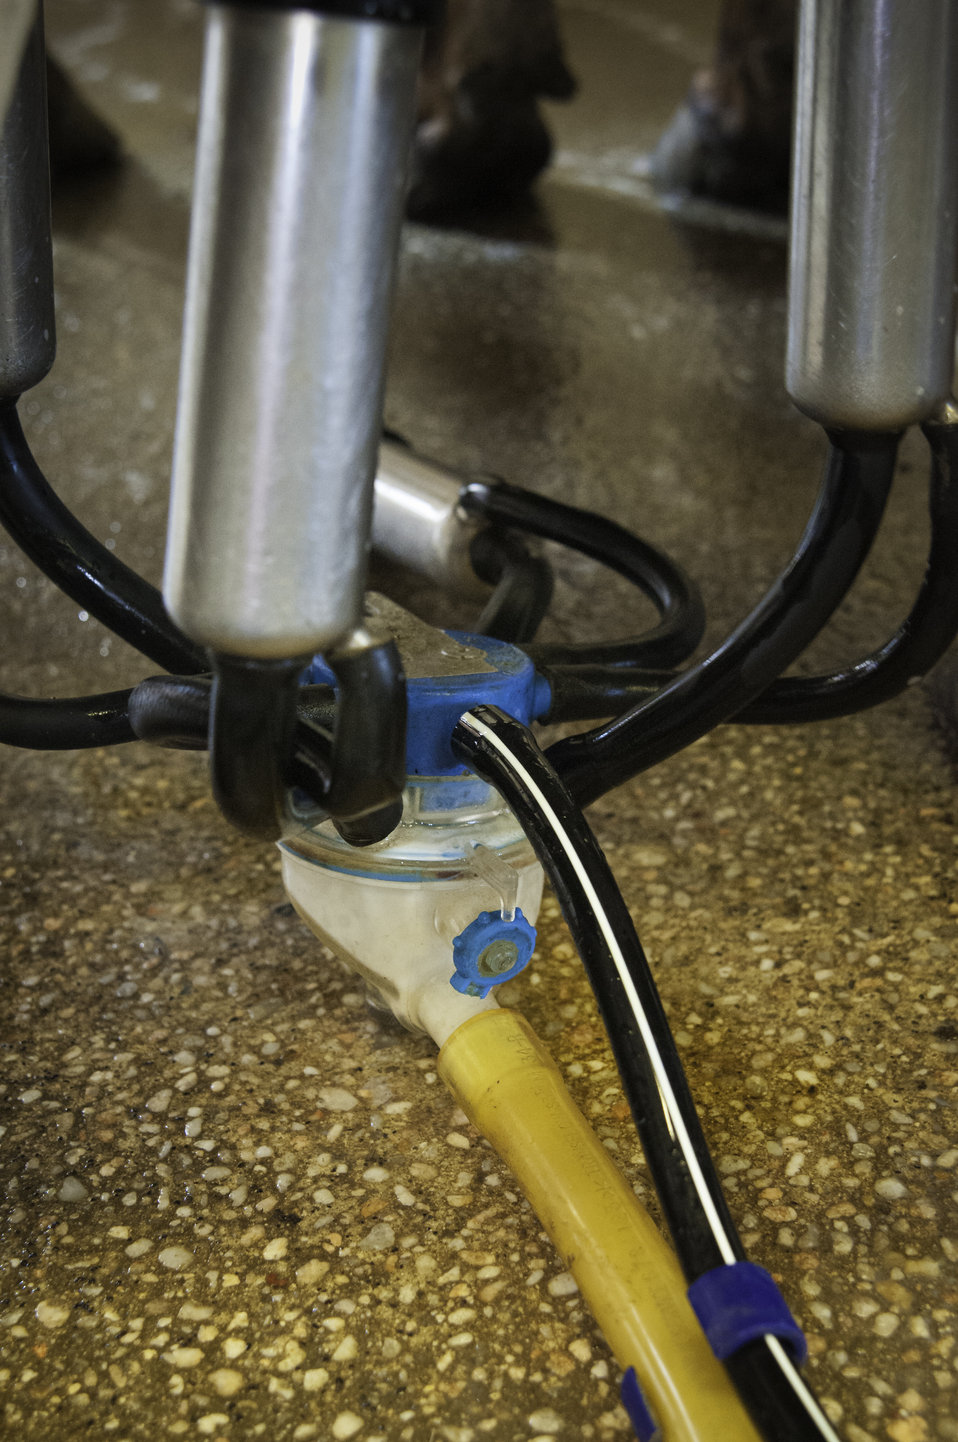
Chapel Country Creamery dairy produces artisan cheeses in Easton, MD starts with fresh raw milk produced on the family's Grade A dairy farm. The dairy herd consists of grass fed Jersey and Holstein cows that produce high quality milk, rich in cream. The milk is all-natural and contains no synthetic hormones, antibiotics, or chemical compounds. The diary produces its own cheese from start to finish, which insures the highest quality possible. They use only vegetable rennet and all natural ingredients in their cheese. The Jersey and Holstein cows graze on clover and rye grass on 45 acres of pasture. The cows are rotated among 32 different pastures to insure that the cows are eating the freshest and most nutritious part of the grass thus providing the highest quality of raw milk that is rich in cream. The dairy received the Talbot County, MD Soil Conservation Award for environmental friendly operations for soil, air and water quality concerns.